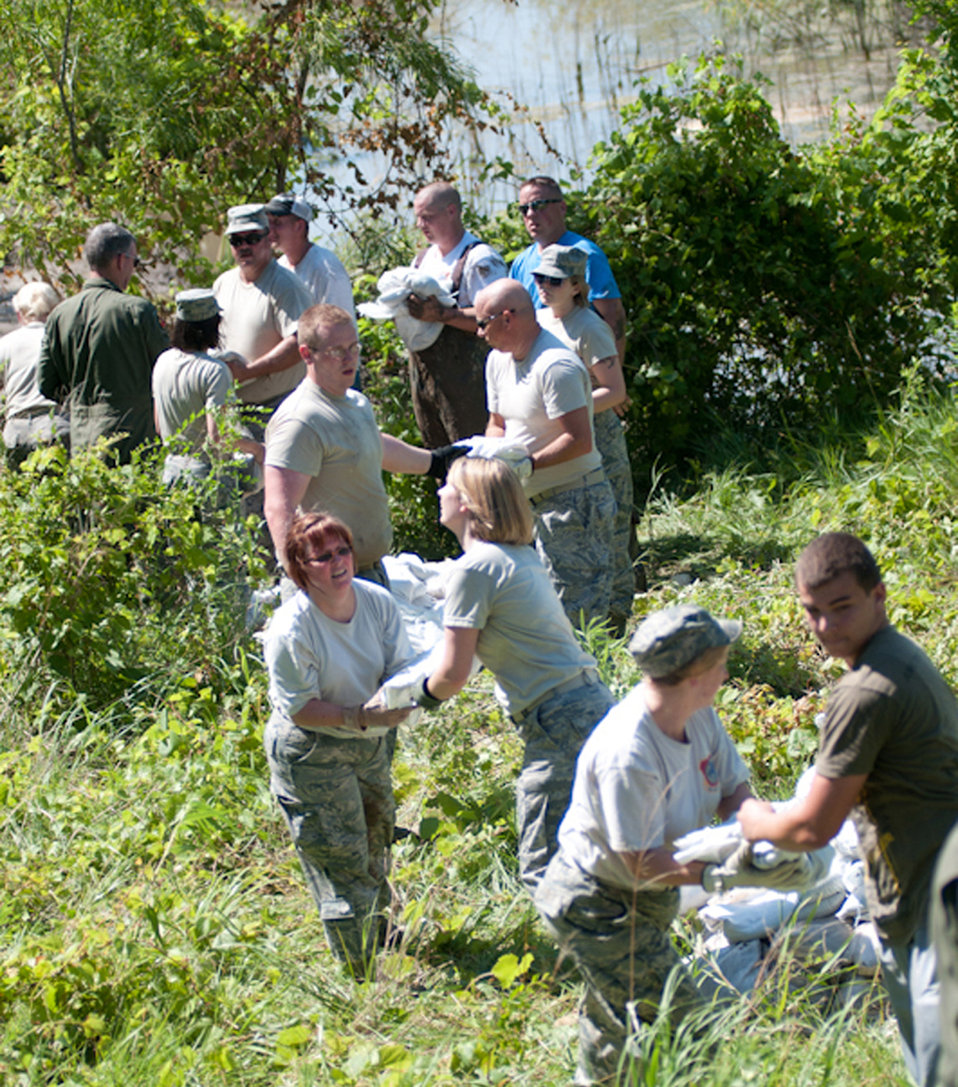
A team effort

Airmen from the Missouri Air National Guard's 139th Airlift Wing in St. Joseph, Mo., pass sandbags down a line June 30, 2011, in an effort to fight rising flood waters near Elwood, Kan.